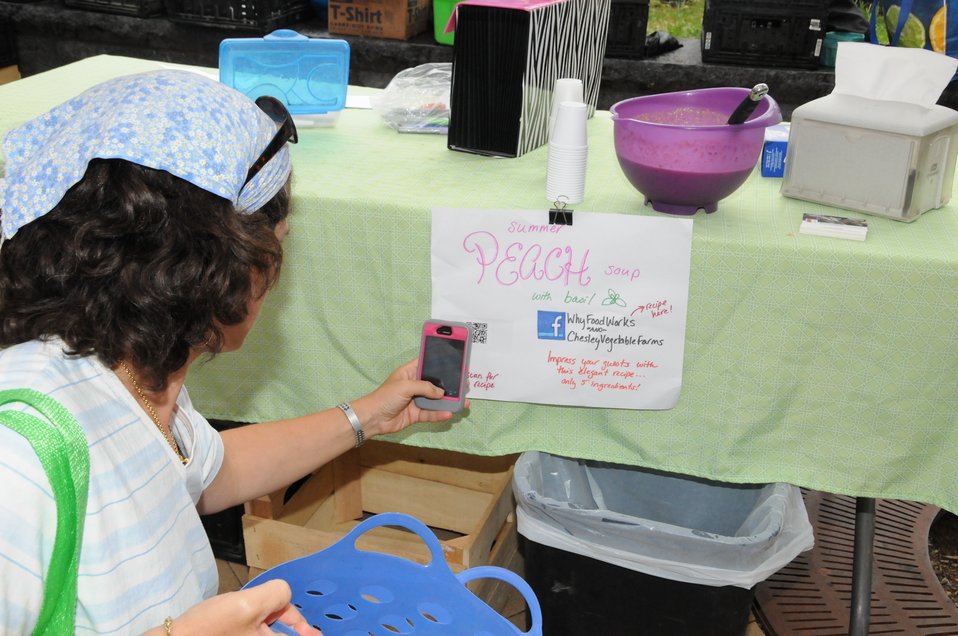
Checking In Virtually

Customers check in virtually at the Columbia Heights Community Marketplace.